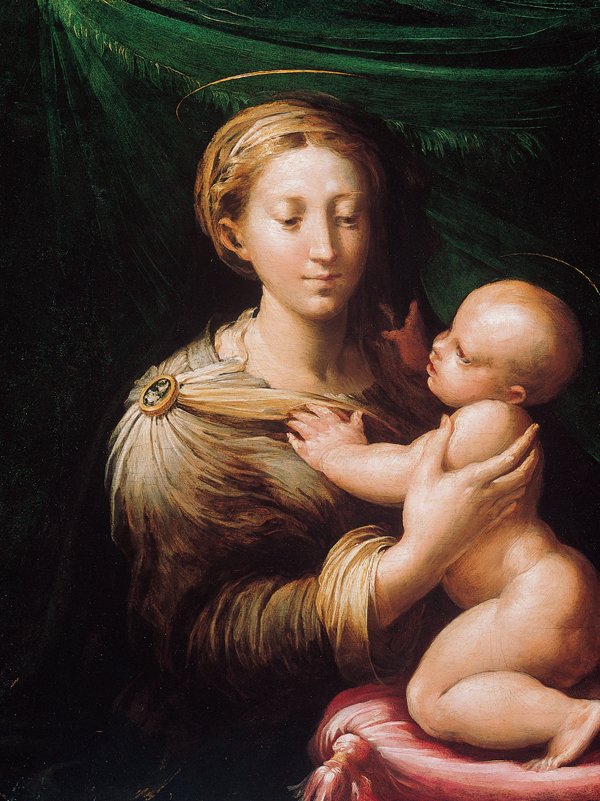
'The Madonna and Child', oil on panel painting by Parmigianino (Girolamo Francesco Maria Mazzola)